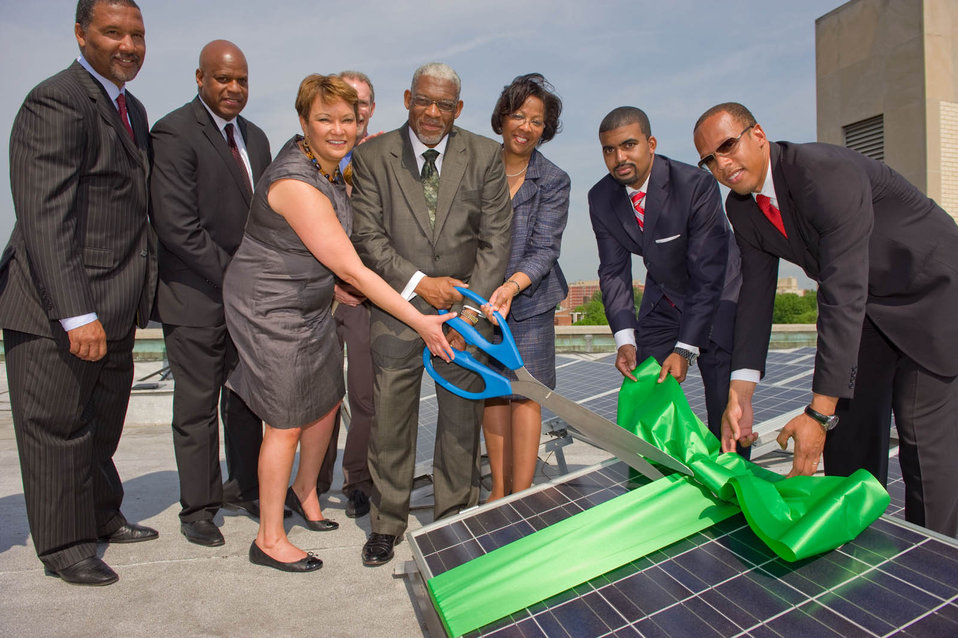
2011-05-03 FlaAveSolar 017